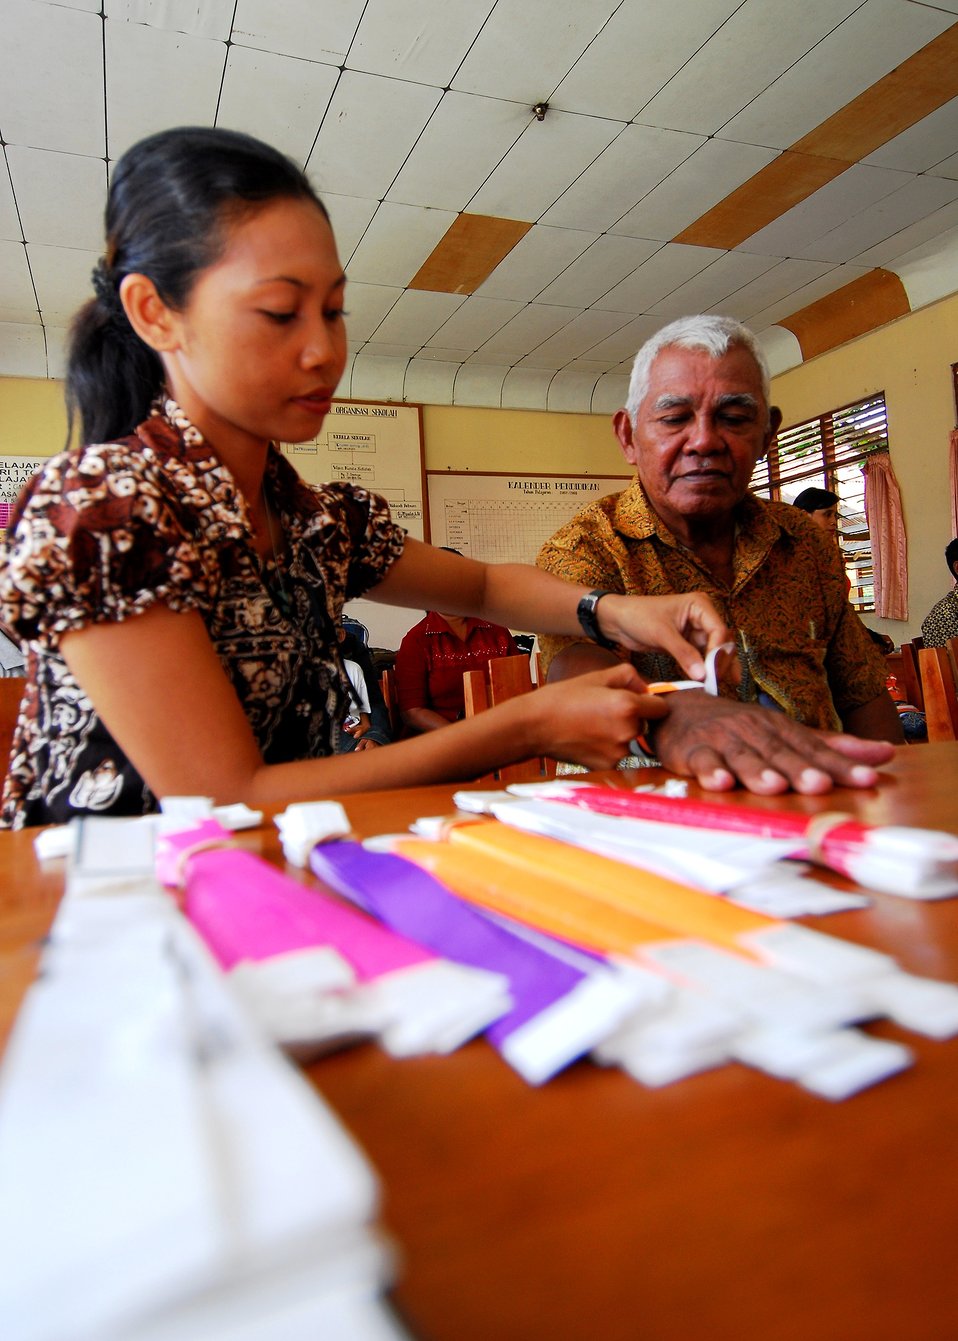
A Volunteer Indonesian Nurse Puts a Color-Coded Bracelet on the Wrist of a Newly Arrived Patient

A volunteer Indonesian nurse puts a color-coded information bracelet on the wrist of a newly arrived patient so the doctors will know what type of care to provide during a medical civic program in Tobelo, Indonesia, on July 14, 2010. USNS Mercy (T-AH 19) is in the North Maluku Islands conducting Pacific Partnership 2010, the fifth in a series of annual U.S. Pacific Fleet endeavors conducted in Indonesia as a disaster relief exercise to strengthen regional partnerships.